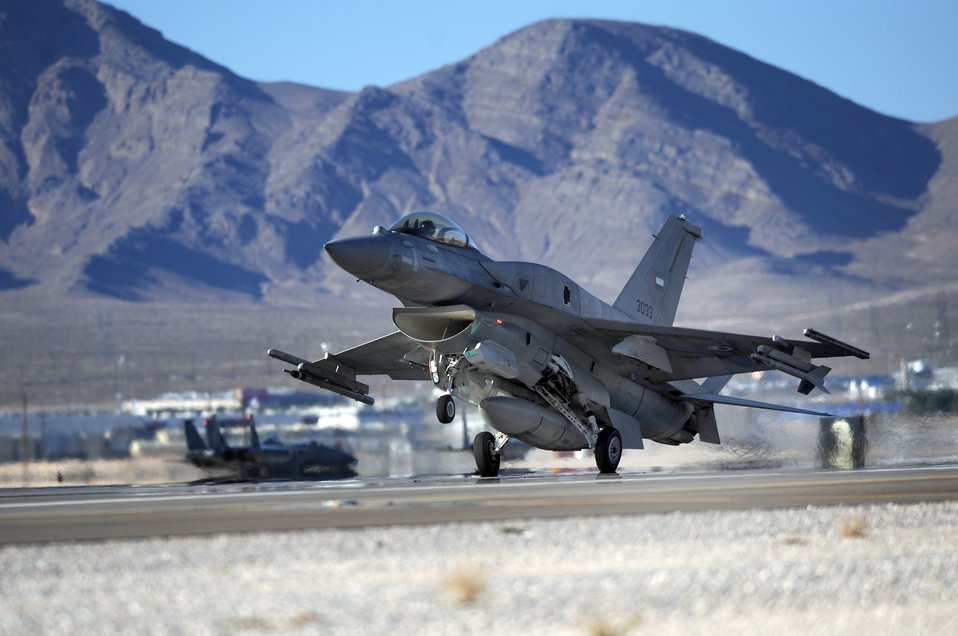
Red Flag trains combat air forces

An F-16E from the United Arab Emirates lands after a training mission during Red Flag Aug. 26, 2009, at Nellis Air Force Base, Nev. This is the first time the nation has participated in Red Flag, a realistic two-week air combat training exercise conducted over the 15,000-square-mile Nevada Test and Training Range north of Las Vegas. The exercise ends Sept. 4.